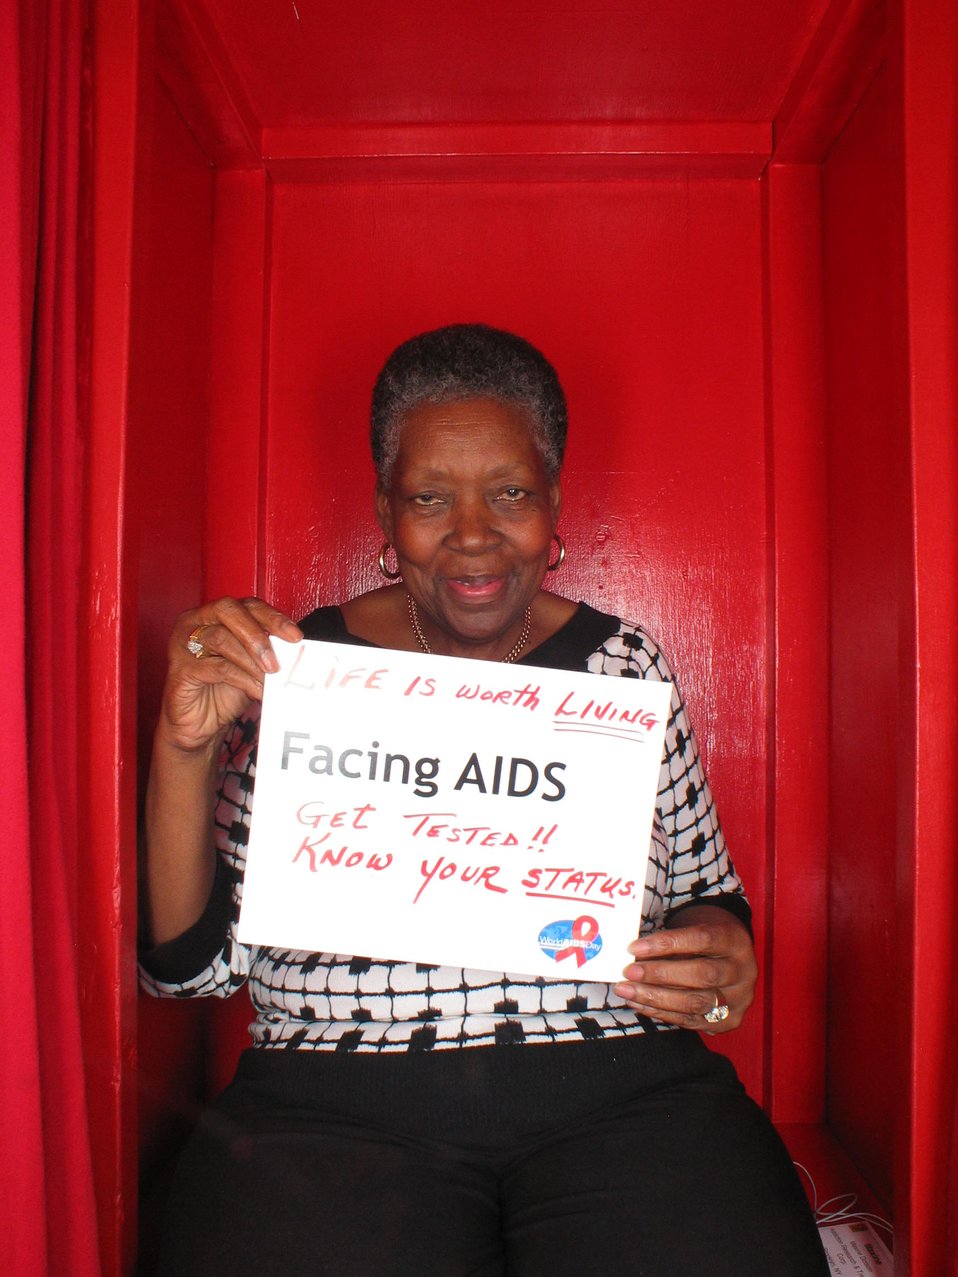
Facing AIDS get tested. Know you're status!